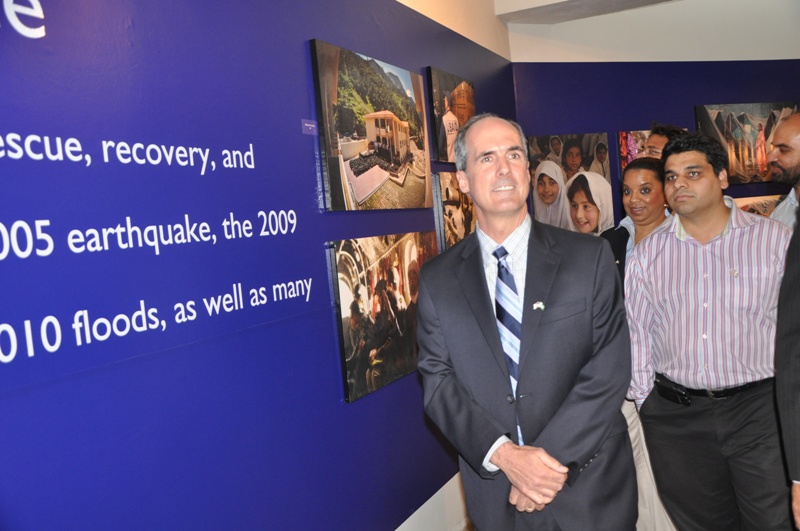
USAID Provinicial Mission Director Punjab at the Retrospective Exhibition